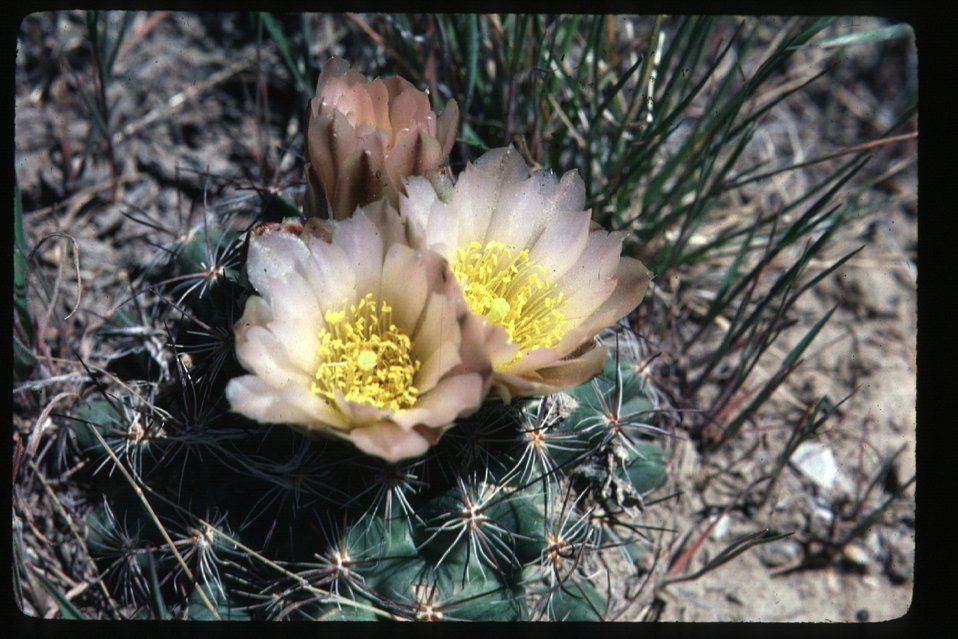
Brush, grasses Wildflowers